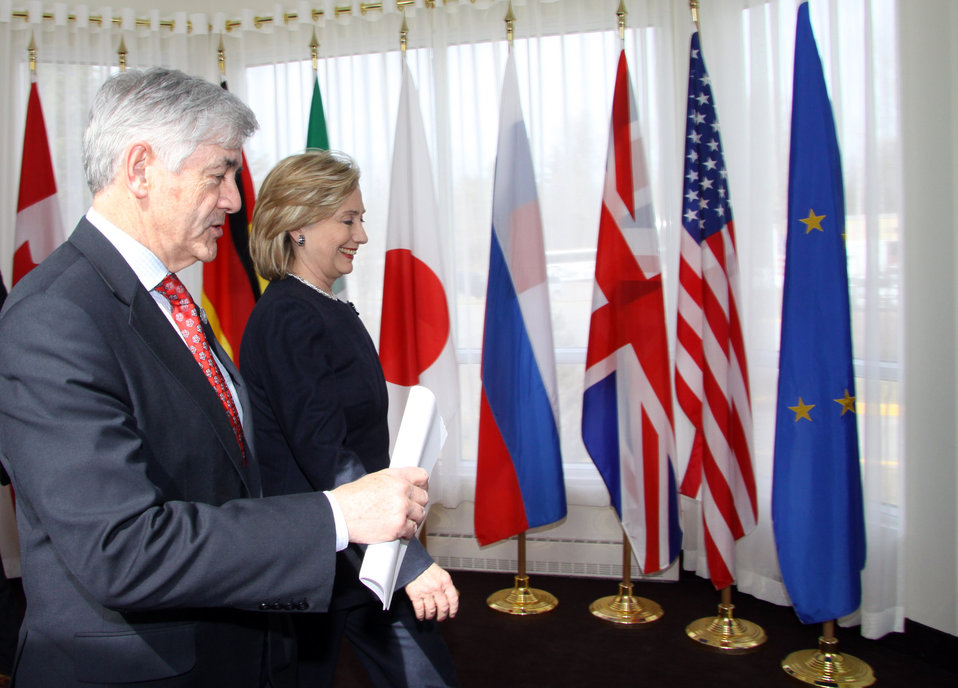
Secretary Clinton With Foreign Minister Cannon

U.S. Secretary of State Hillary Rodham Clinton and Canadian Minister of Foreign Affairs Lawrence Cannon walk to a meeting during the G8 Foreign Ministers Meeting in Ottawa, Canada March 29, 2010.